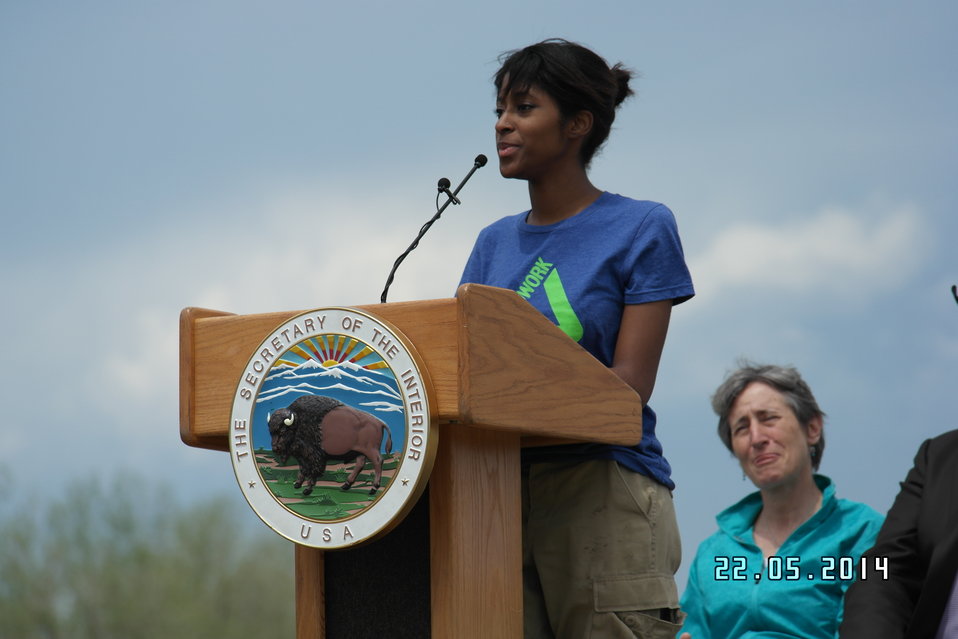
Secretary Jewell Announces $6.7 for Youth Conservation Jobs

Jewell made the announcement at an event at Rocky Mountain Arsenal National Wildlife Refuge outside Denver, Colorado, where she was joined by U.S. Department of Agriculture (USDA) Deputy Under Secretary for Natural Resources and the Environment Arthur “Butch” Blazer; Greg Knadle, Vice President for Government Relations of the National Fish and Wildlife Foundation (NFWF); Refuge Manager David Lucas and youth corps members of Groundwork Denver.